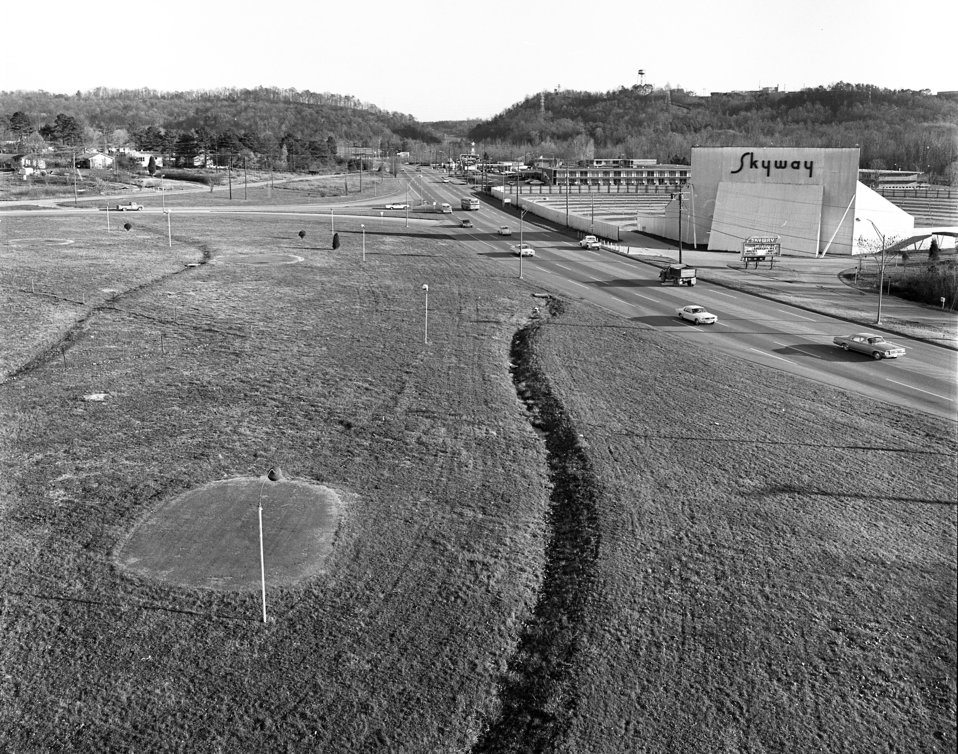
Illinois Ave. Skyway Drive In Oak Ridge 1968

68-582b DOE photo Frank Hoffman 11-25-1968 Oak Ridge Tennessee